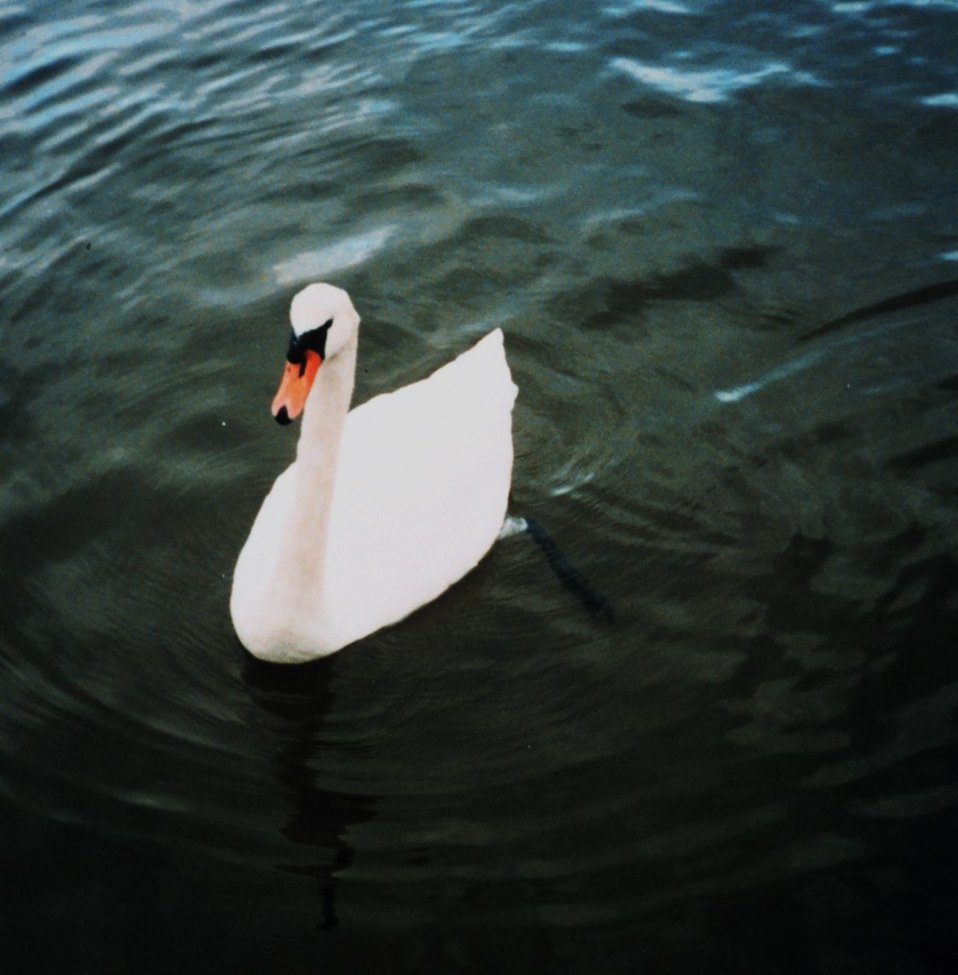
Mute swan. Mute swans are an agressive invasive species along the East Coast. There are now over 3,000 mute swans in the Maryland portion of the Chesapeake Bay.